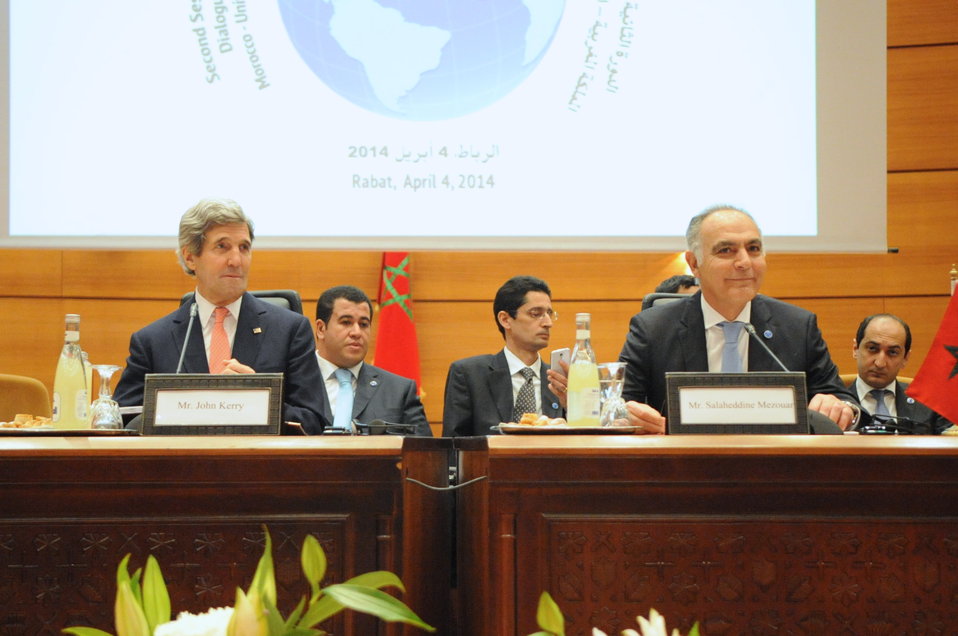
Secretary Kerry and Moroccan Foreign Minister Open Plenary Session of Strategic Dialogue in Rabat

U.S. Secretary of State John Kerry and Moroccan Foreign Minister Salaheddine Mezouar sit next to one another before the opening Plenary Session of the Strategic Dialogue between their two countries at the Ministry of Foreign Affairs in Rabat, Morocco on April 4, 2014.